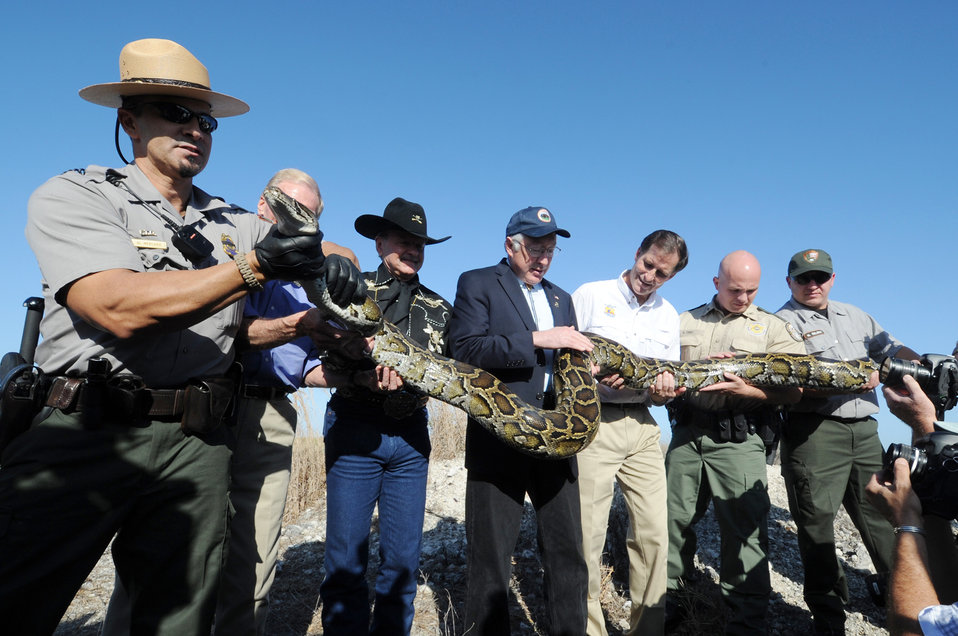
Group shot of Secretary Salazar, Senator Ben Nelson, and Dan Ashe with Python